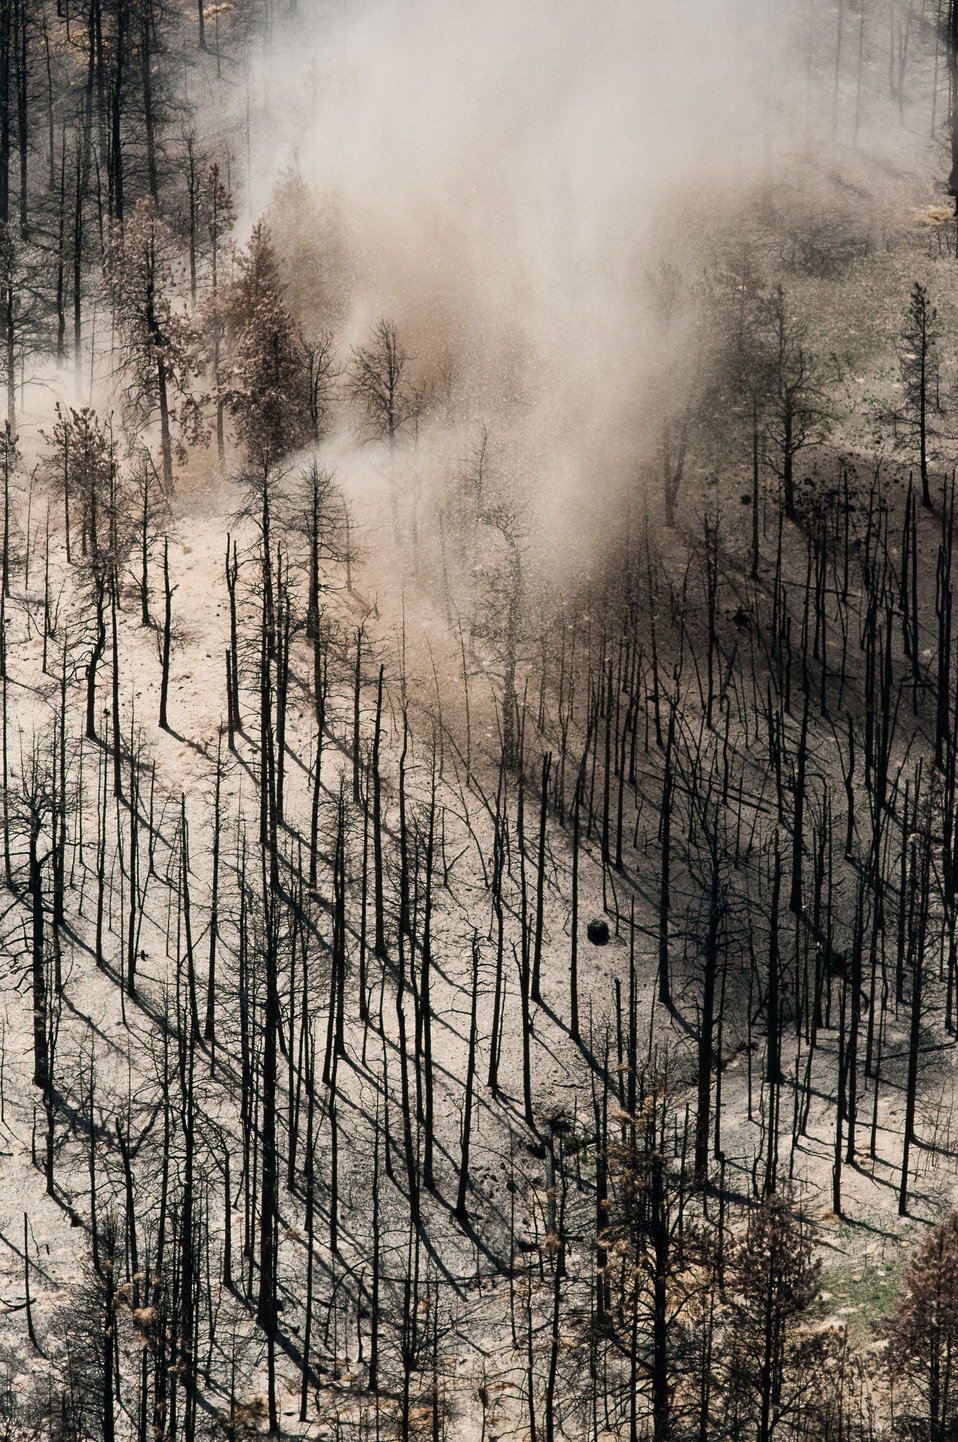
A ton of straw slowly falls during an aerial disbursement over a burned out area of the Poudre Canyon mountainside, on Friday, July 20, 2012, near Fort Collins, Colorado. This is an aerial application of straw that will mitigate soil and ash runoff from the mountainous terrain leading to Seaman Reservoir, drinking water resource for the City of Greeley. Forest Service lands receive straw, while private and other lands receive a seed mix and straw to promote ground cover plant growth on ash-covered lands. In total, 1,800 tons of straw will be applied during the 14-day operation. One quarter of the cost was paid by the City of Greeley and the U.S. Department of Agriculture funded the remainder. The Hewlett Gulch Fire was started by a camper’s alcohol stove, on May 14, at the saddle of a picturesque mountain ridge along the Hewlett Gulch Trail of Poudre Canyon, in the Roosevelt National Forest, 60 miles north of Denver. At it’s peak more than 400 firefighters were battling fires being pushed by 50 mph winds that helped blacken over 12-square-miles of dry ground cover, brush and trees. Many of the trees were already dead and tinder dry from beetle-kill. Their efforts have successfully kept water in the reservoir clean and clear, while downstream water flow has gone from famous Colorado clear water to nearly black flows of water heavily laden with ash, silt, and burnt debris that recent thunderstorms have already washed down from the mountainsides.